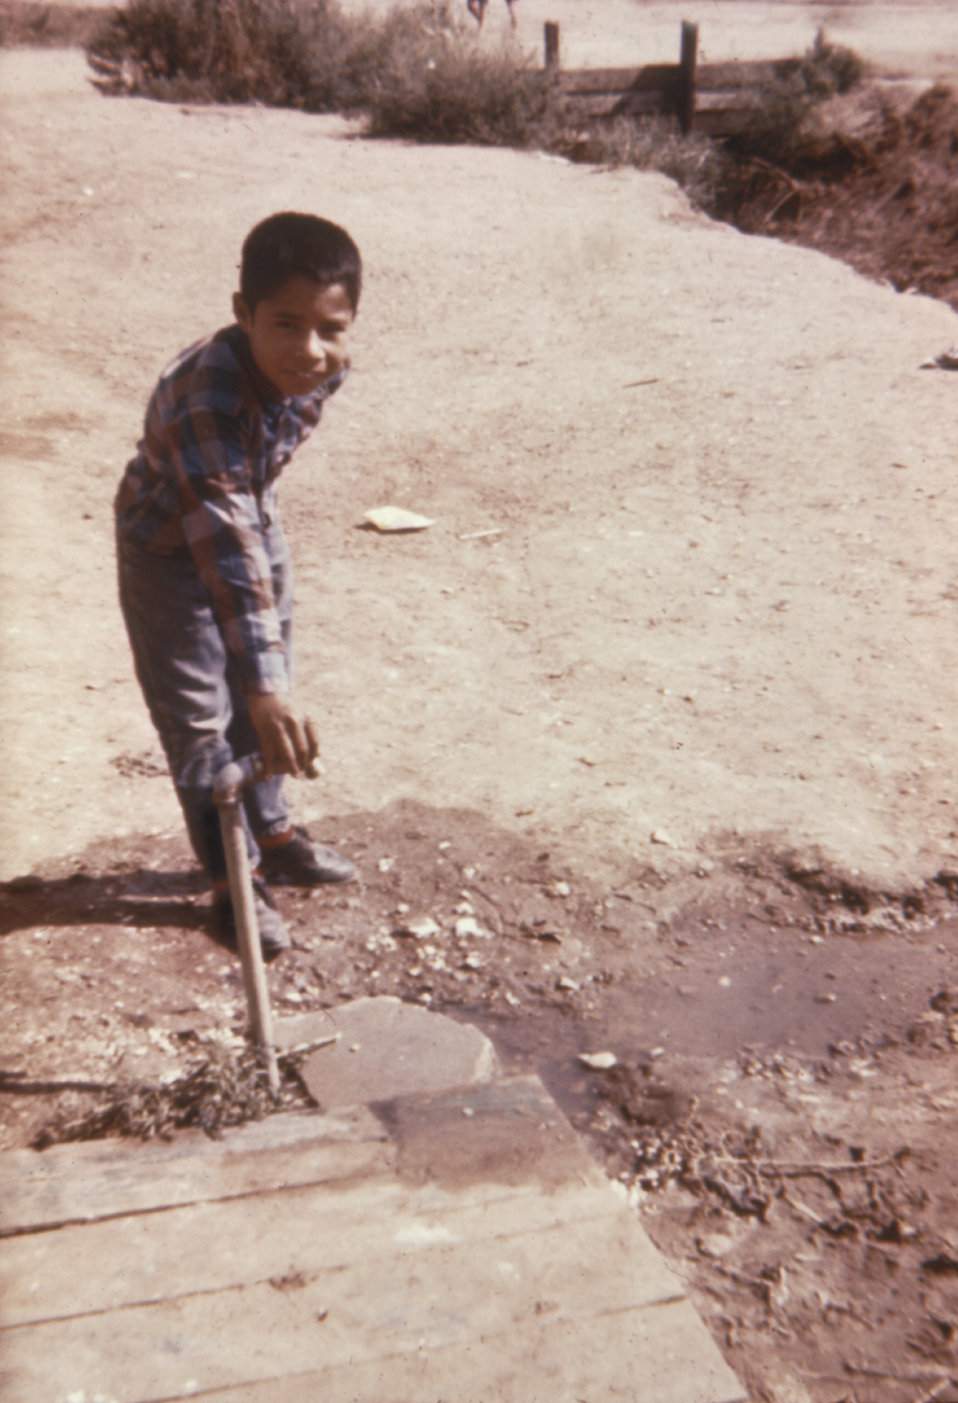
This was part of a series used to familiarize public health inspectors with sanitation conditions in migrant worker camps.